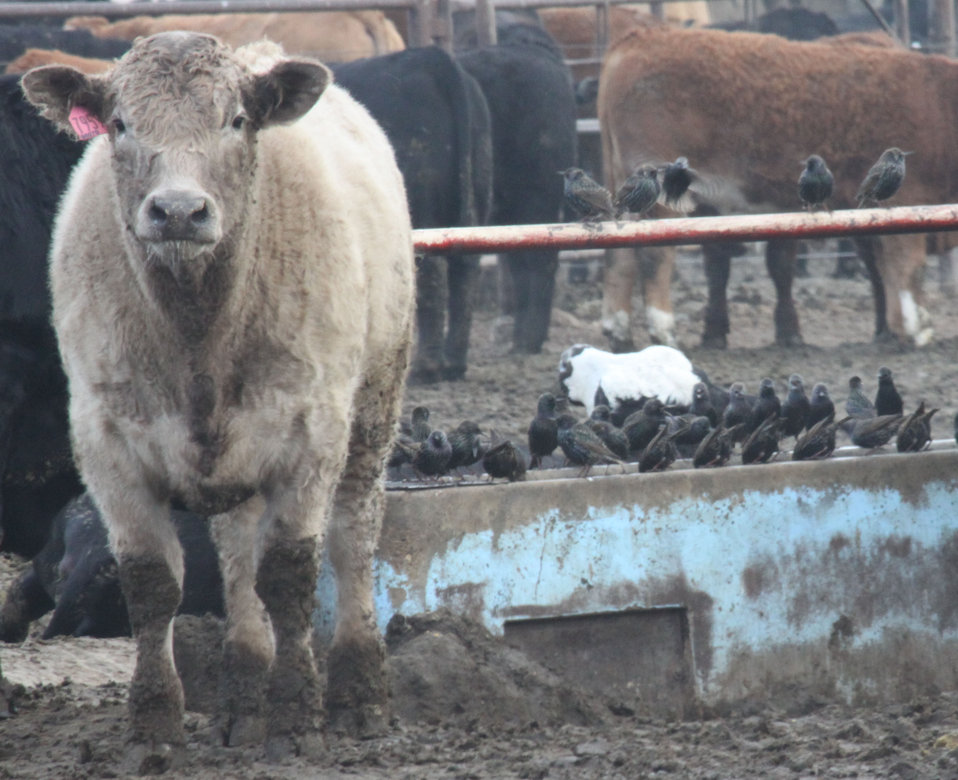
Invasive European starlings can damage agricultural crops, cause sanitation and disease problems, compete with native birds, and consume and contaminate livestock feed. Recent U.S. Department of Agriculture (USDA) Animal Plant Health and Inspection Service (APHIS) Wildlife Services (WS) studies have shown a link between starling use of cattle feedlots and the spread of Salmonella contamination within cattle feed and water.